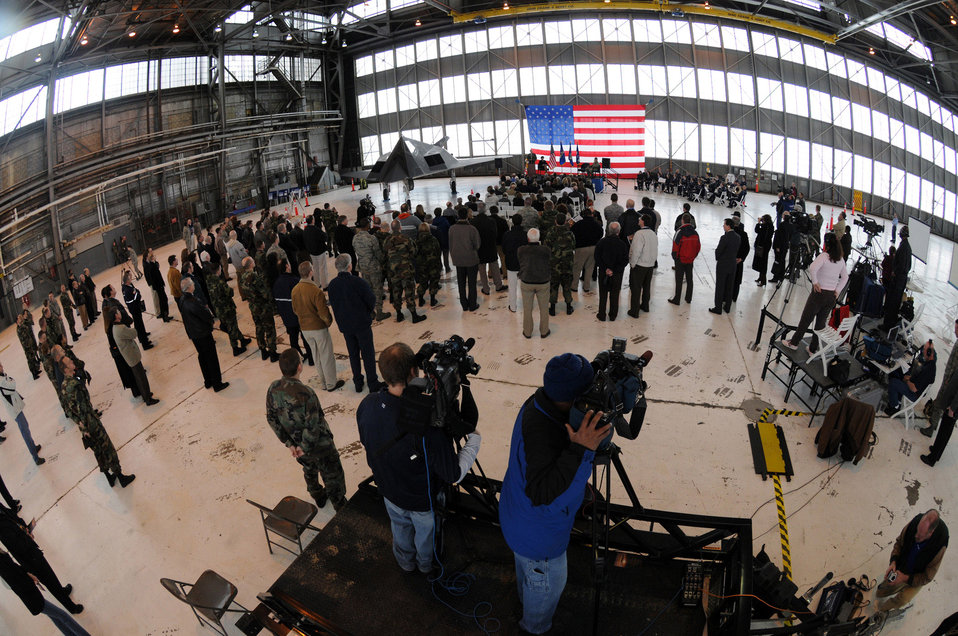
F-117 retires

A military and civilian audience listens to guest speakers during the F-117 Nighthawk farewell ceremony at Wright-Patterson Air Force Base, Ohio, March 11. The ceremony concluded with a single ship flyover.